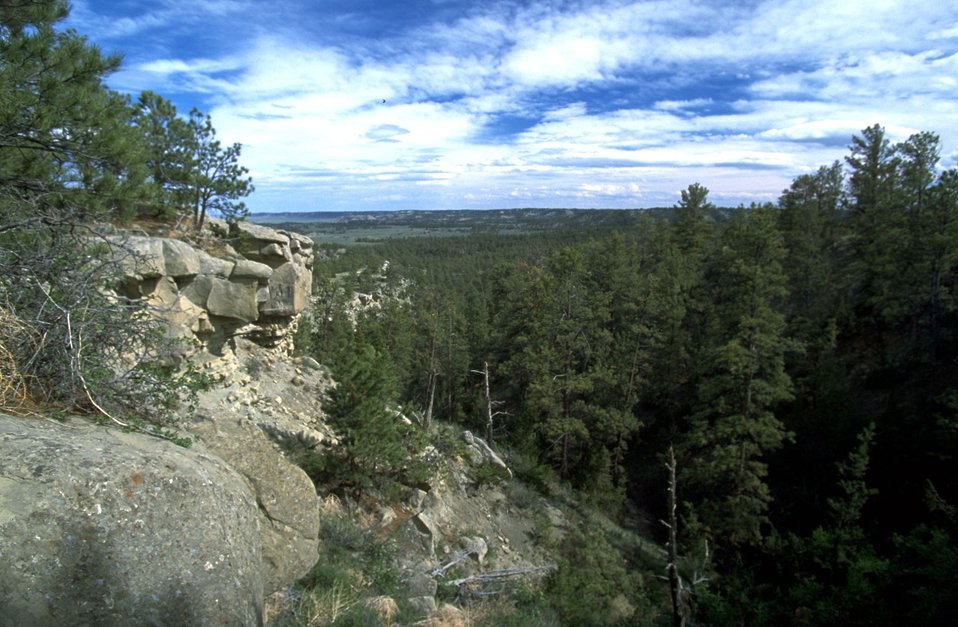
Looking east from rimrocks in the Acton Recreation Area